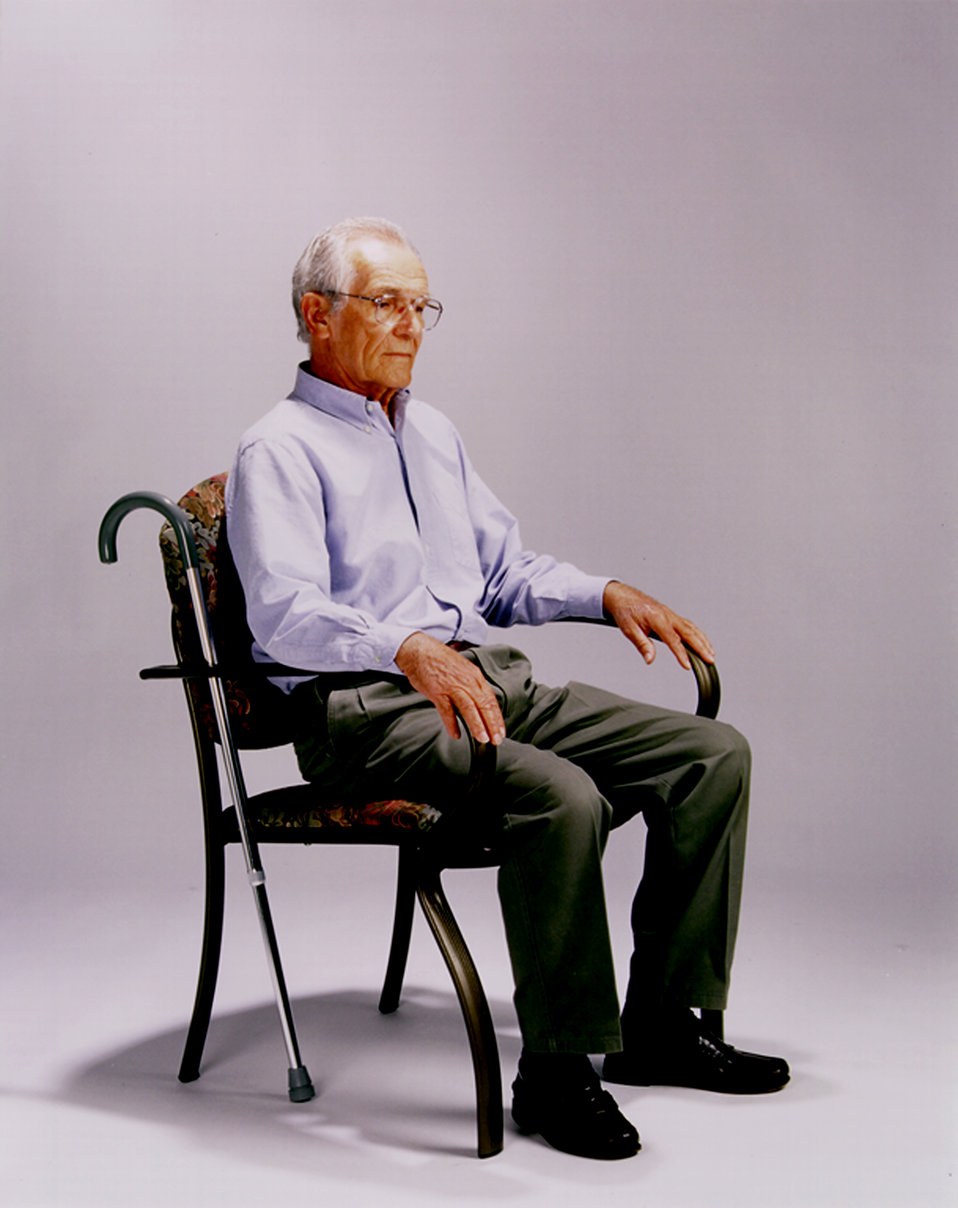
This is one of a series of ten images, (PHIL# 9144 - 9153), depicting one of LifeSpan� Furnishing's line of chairs, designed to make sitting down and rising safer and easier, and sitting more comfortable and supportive. This elderly man, who'd been using a walking cane, was pictured sitting down. PHIL# 9149 showed this man in the act of sitting. These chairs combined aesthetics and function, and were more comfortable for most people, benefiting those who would care for others, by reducing physical exertion and stress needed when assisting others. The user could take advantage of the extended arms for stability when lowering or rising from a seated position. Close attention was paid to many small details including the non-skid rubber feet, and the elimination of pinch points and sharp edges. The LifeSpan� seating product line included four different designs, all based on an extended arm and leg concept that provided users with better leverage and support.ort.